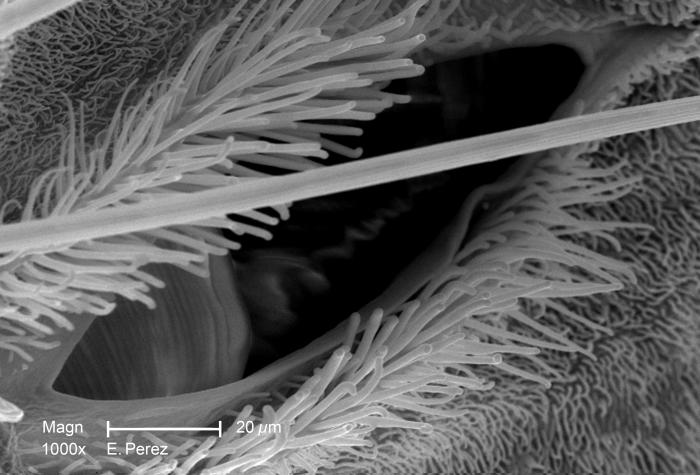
This is the forth of four scanning electron micrographs (SEM) that are representative of successively greater magnifications of the thoracic region of an unidentified mosquito discovered in the suburbs of Decatur, Georgia. At a magnification 10X greater than PHIL 10519, and 4X that of 10520, and twice that of 10521, this SEM depicts the morphology of this region focusing on the anatomical feature known as the 'spiracle', which is one of two orifices located on the thorax through which the insect breaths. There are eight additional spiracles located on the abdominal region as well. You'll also note the presence of numerous setae, or sensorial 'hairs', which are composed of the same material as the exoskeleton itself, a substance known as chitin.